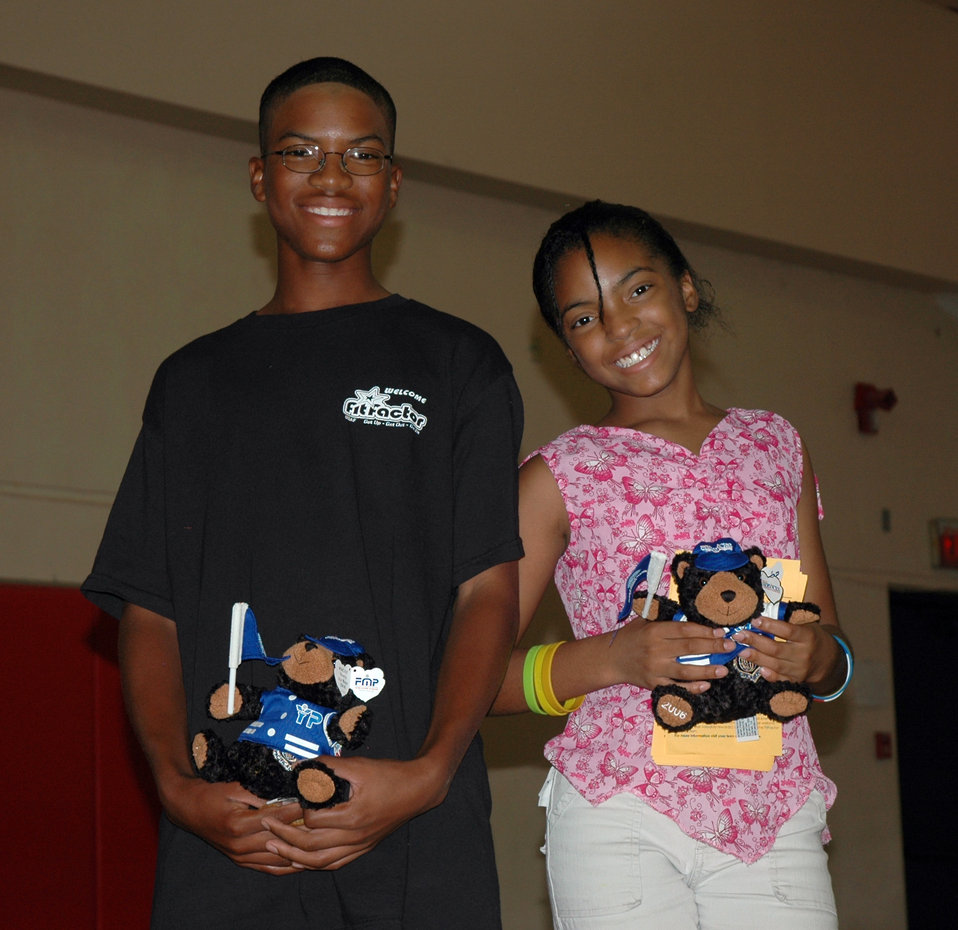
FitFactor

ANDERSEN AIR FORCE BASE, Guam (AFPN) -- Fenton and Cierra Fitzgerald earned the maximum allowable daily points here for the FitFactor program by doing various activities on a daily basis. They included walking, running, basketball and playing instruments.